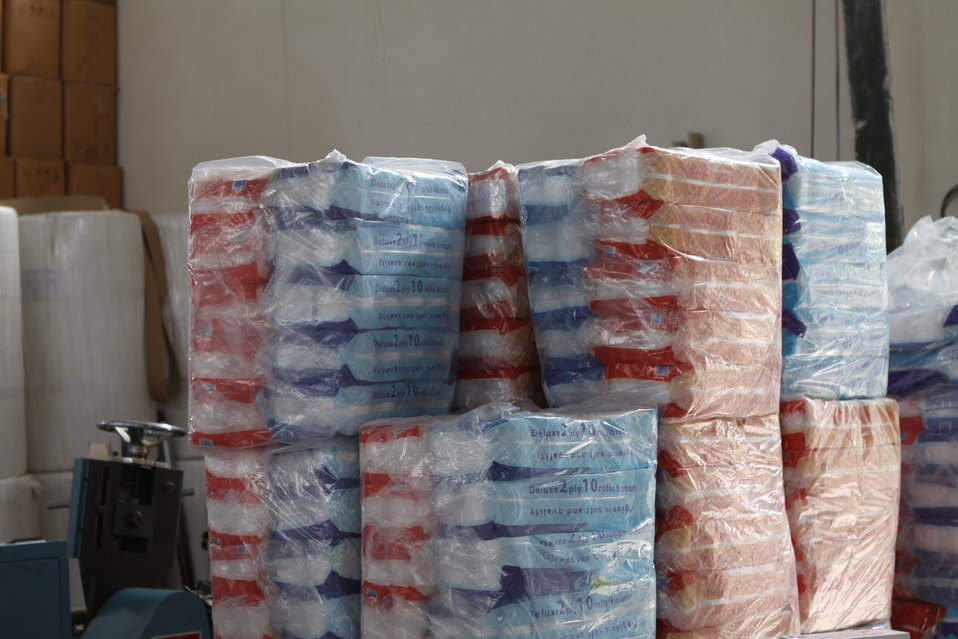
100525 Hirat Marble Conference 819